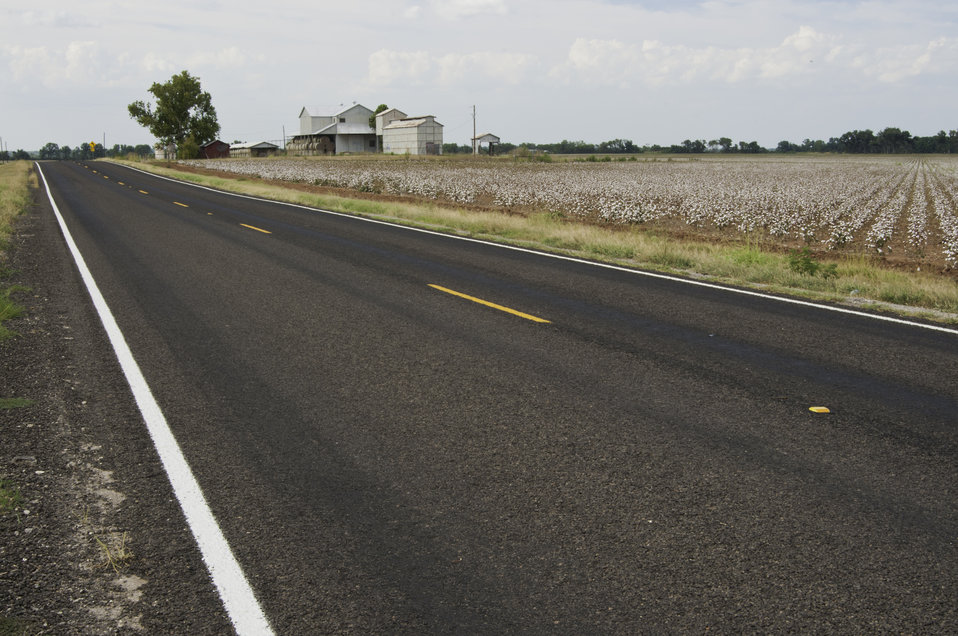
Dry Land cotton grows near a roadway on a farm in Navasota, TX on Aug. 23, 2013.